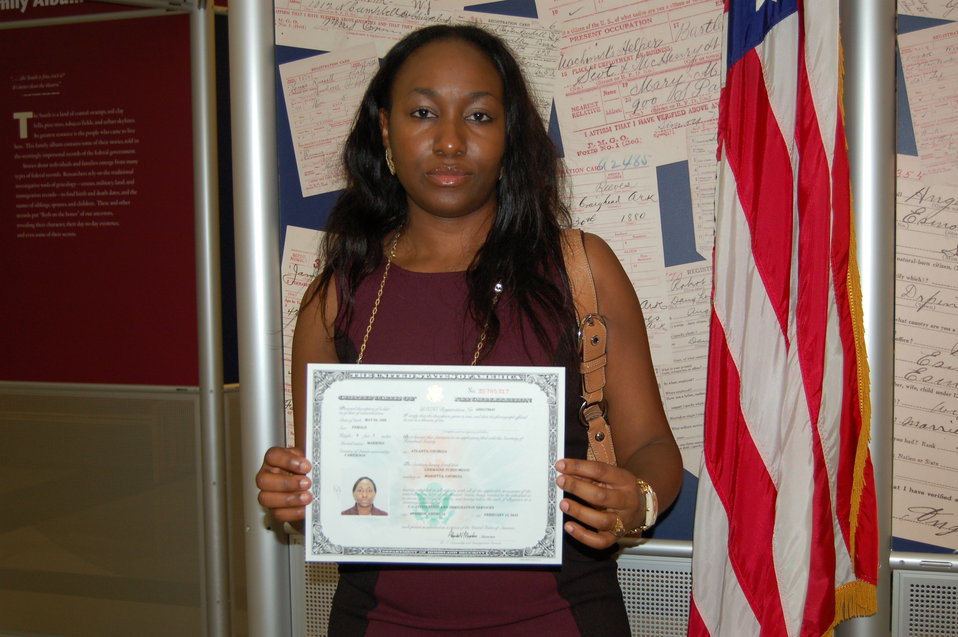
New Citizens